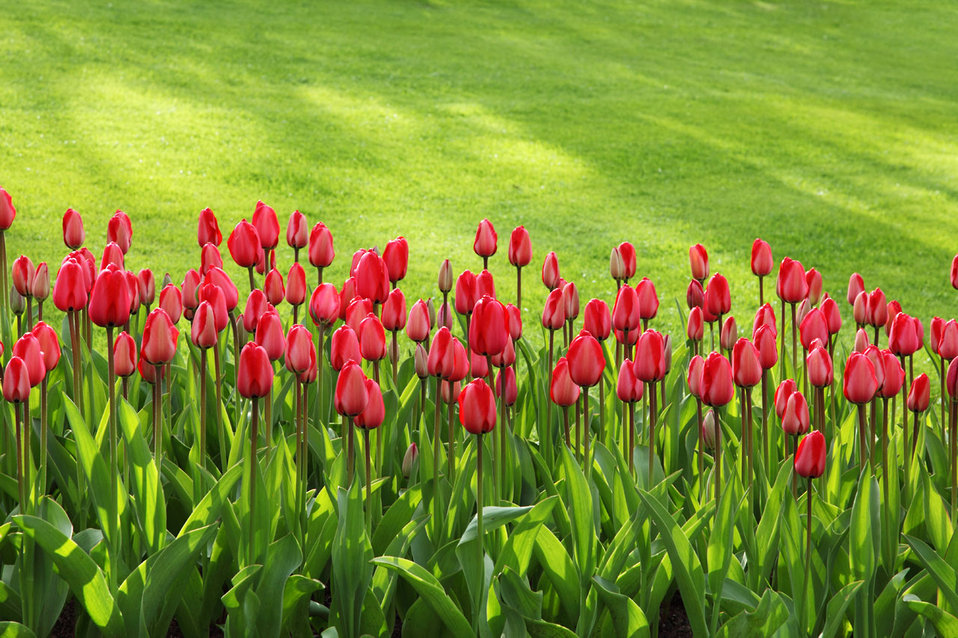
Red tulip line

Line of red tulips with green grass in background.